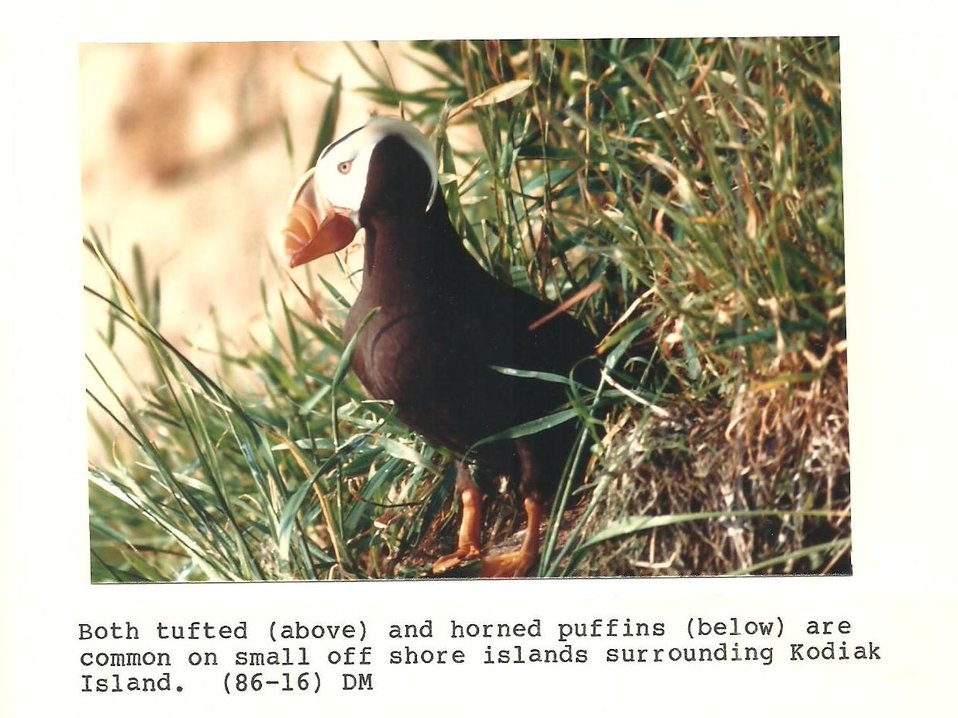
(1986) Tufted Puffin

Credit: USFWS

Source and Contact: Kodiak National Wildlife Refuge